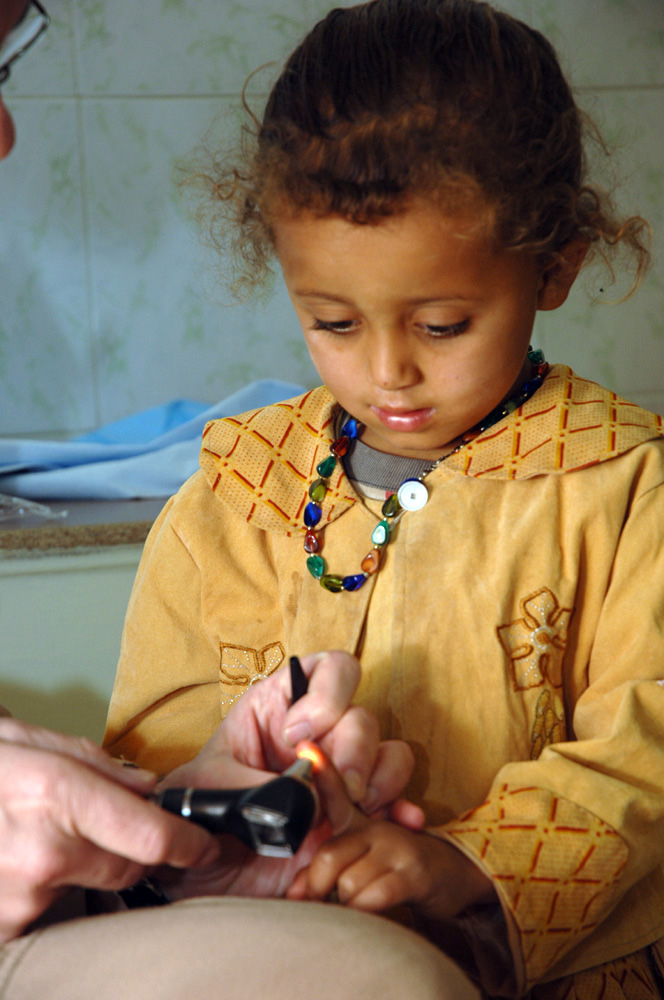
Baghdad clinic

BAGHDAD, Iraq (AFPN) -- Lt. Col. (Dr.) Randy Guliuzza uses a otoscope to examine a little Iraqi girl in a clinic here. The colonel is the 447th chief of aerospace medicine.